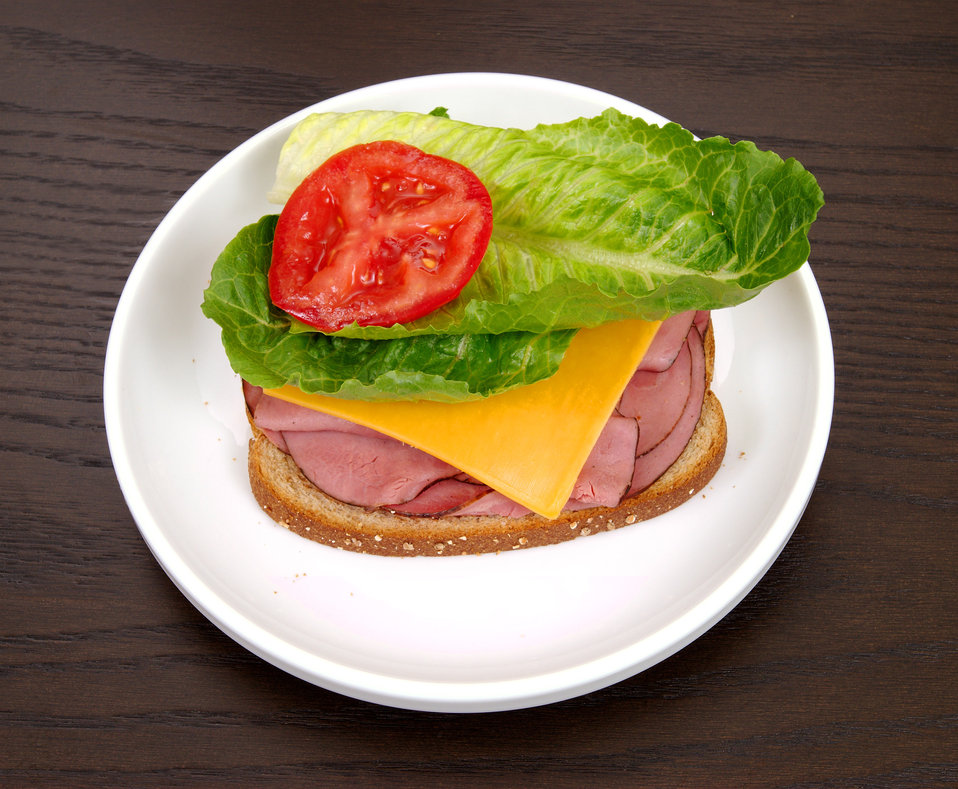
Choices not only involve which foods you eat, but how much as well. Note that this ham and cheese sandwich is made with attention to quantity, and caloric intake. A single piece of cheese, along with three or four slices of very lean ham, makes for a terrific, light and tasty lunch or snack. To add to the nutritional value of this sandwich, it included some nutrient-dense garnish consisting of a tomato slice, and some romaine lettuce.